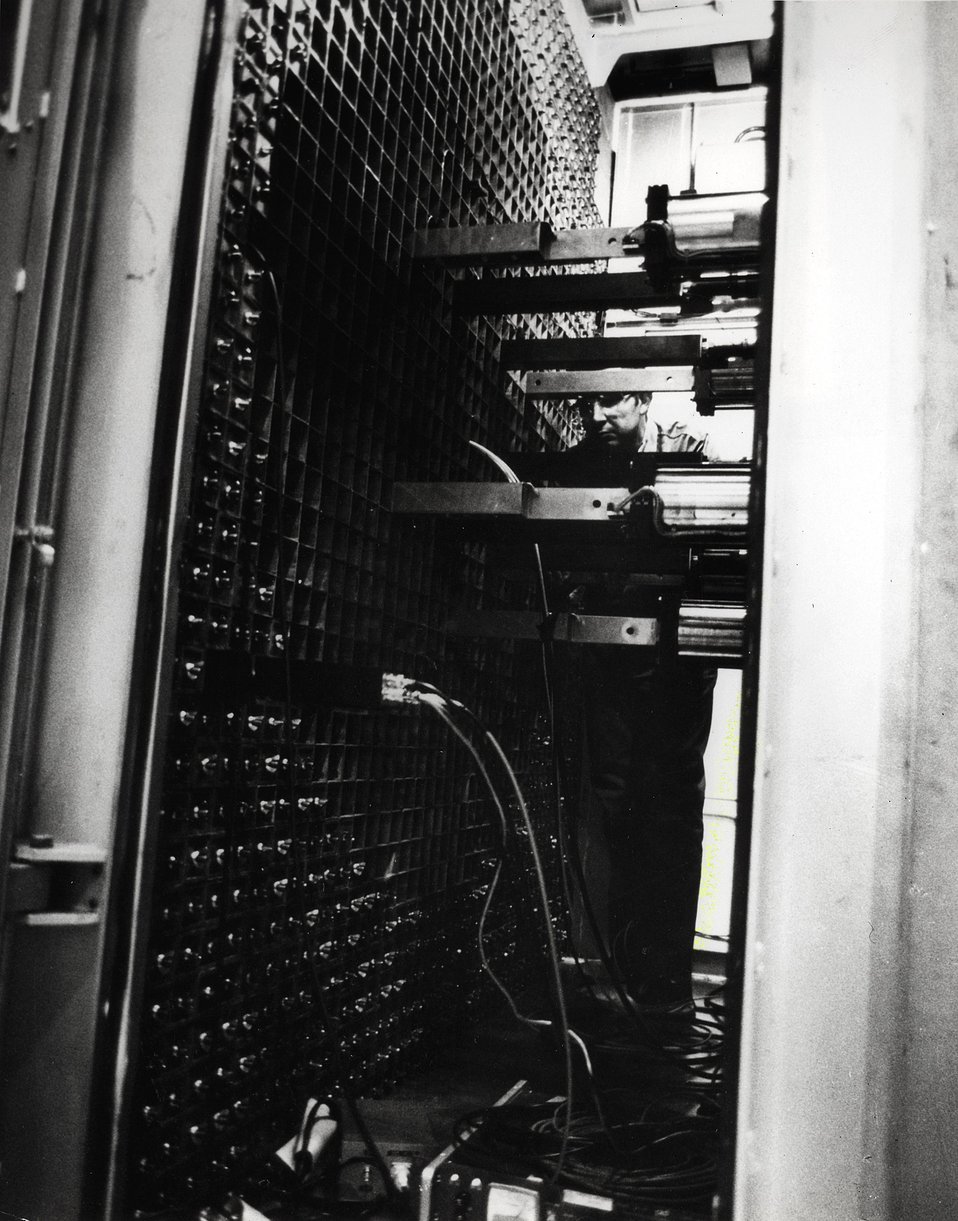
A technician inspects the control rod assemblies in the ZPR VI reactor at Argonne.